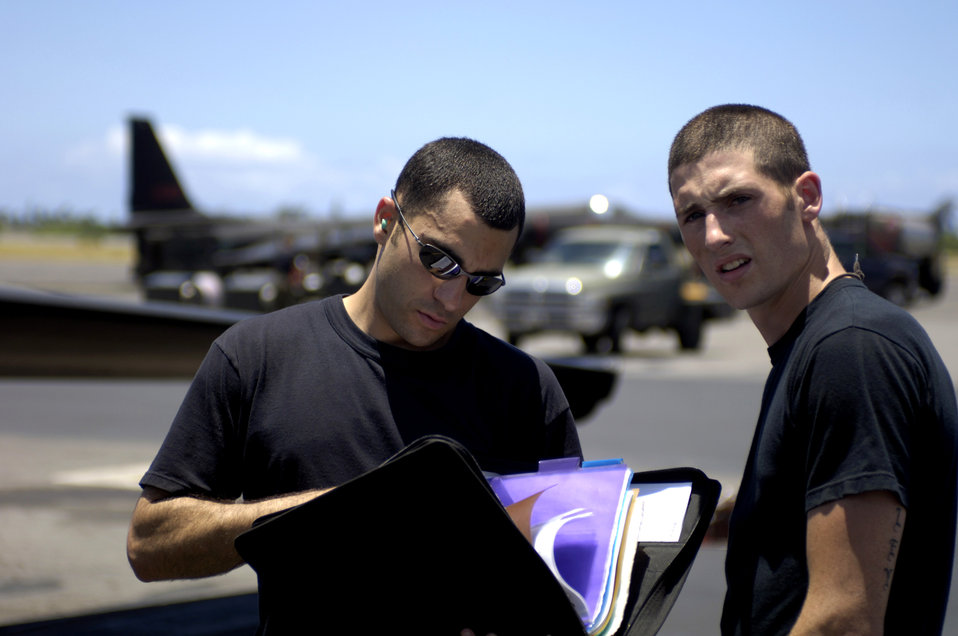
Dragon Lady face-lift

Staff Sgt. Andrew Di Betta and Airman 1st Class Michael Viel review a maintenance log for a U-2 Dragon Lady before it takes off from Hickam Air Force Base, Hawaii, on Tuesday, June 13. The aircraft is en route to South Korea. U-2s are undergoing a $1.5 billion upgrade. Cockpit instruments will be modernized with full-color displays that replace gauges and dials with state-of-the-art, touch-screen technology. Sergeant Di Betta and Airman Viel are crew chiefs from 9th Maintenance Squadron at Beale AFB, Calif.